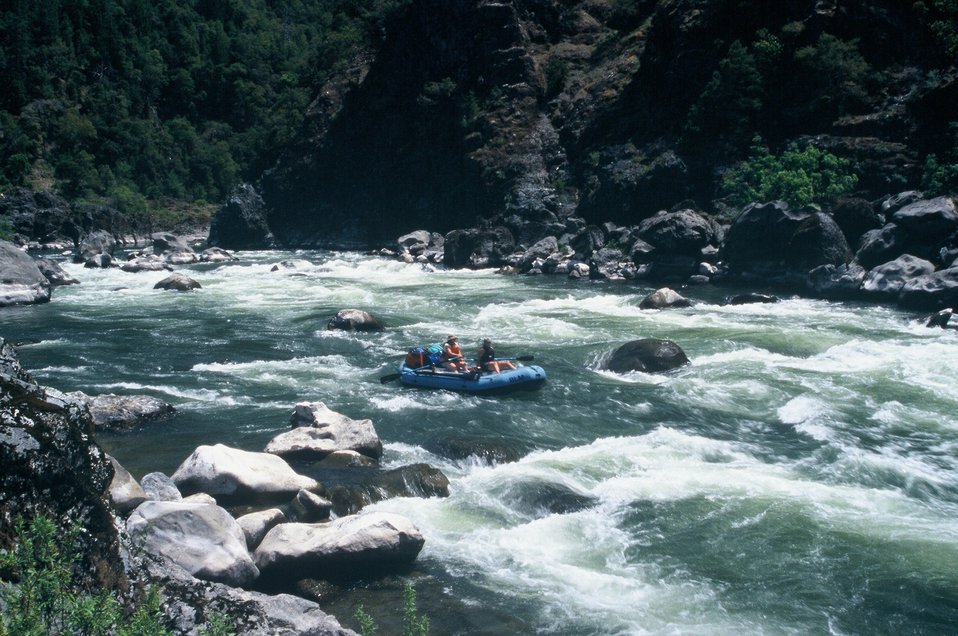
Wild section of the Rogue River from Grave Creek to Foster Bar May 19 to May 22.